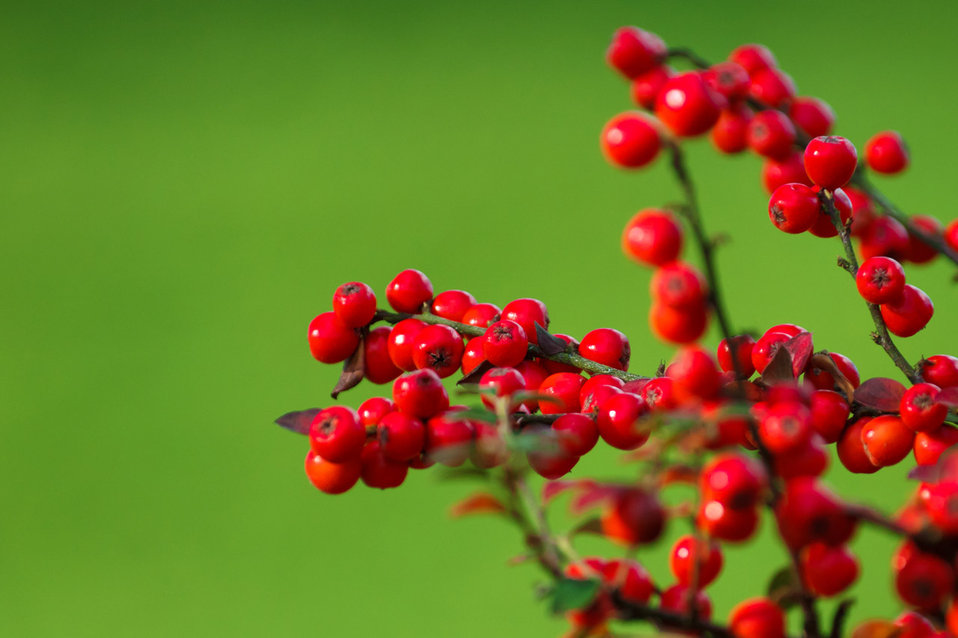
Red berries on green background.